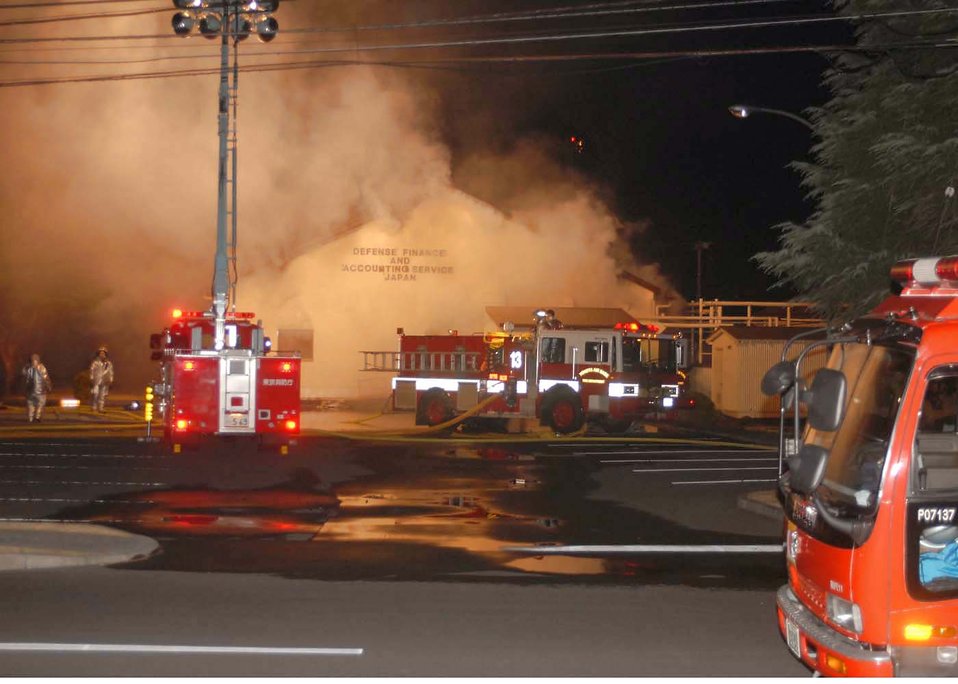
Yokota, Japanese firefighters dowse base fire

Firefighters from the 374th Civil Engineer Squadron and the Tokyo Metropolitan Fire Department work together to fight a fire at the Defense Finance and Accounting Service Japan building that caught fire at about 6:30 p.m. Jan. 20 at Yokota Air Base, Japan.